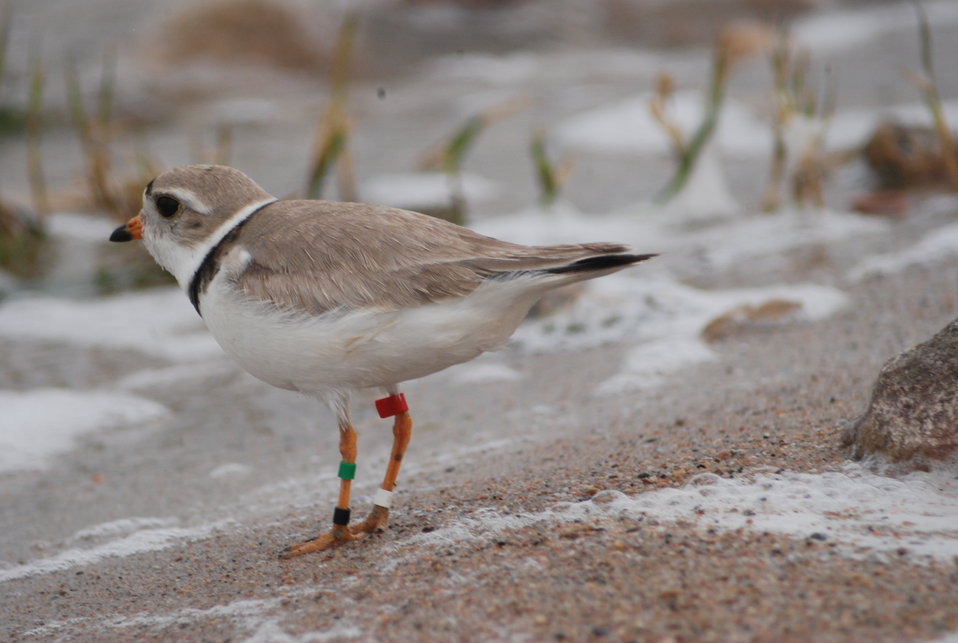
Piping Plover

Jacob Gross/USFWS